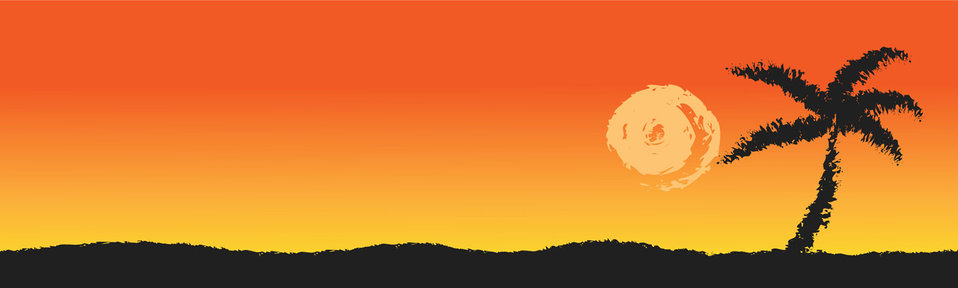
Palm tree at sunset

Black palm tree at sunset.